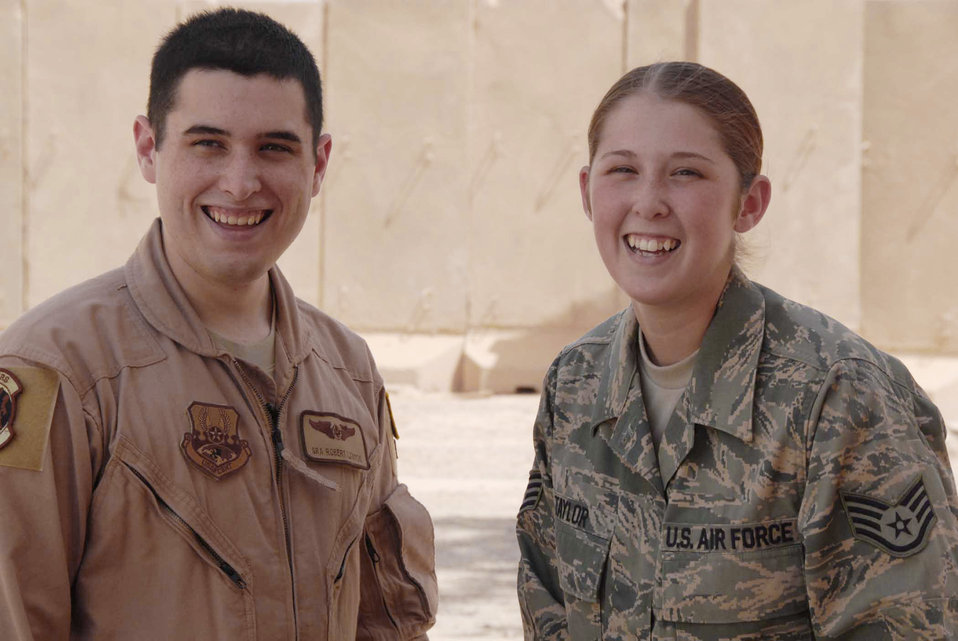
Siblings reunite at Joint Base Balad

Siblings Senior Airman Robert Laxton and Staff Sgt. Alissa Taylor share a moment at Joint Base Balad, Iraq. Airman Laxton is a 362nd Expeditionary Reconnaissance Squadron cryptologic operator. Sergeant Taylor is a 64th Expeditionary Rescue Squadron aviation resource manager.